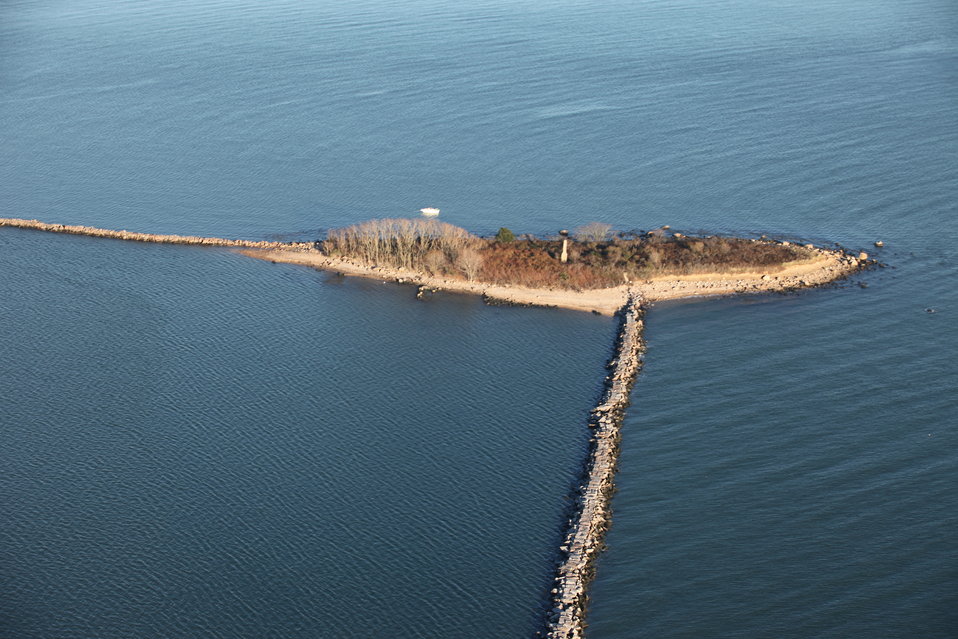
Stewart B. McKinney National Wildlife Refuge-Duck Island (CT)

An aerial view of Duck Island at the Stewart B. McKinney National Wildlife Refuge in the aftermath of storm Sandy.